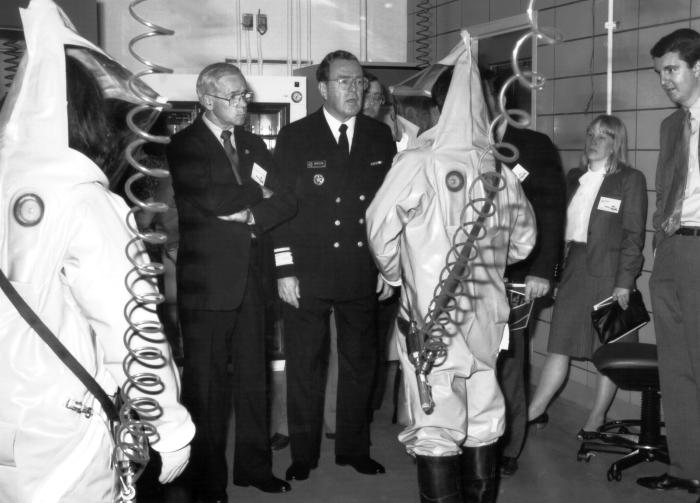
This 1988 photograph shows Assistant Secretary for Health, Robert E. Windom, MD (Cntr), observing a BSL-4 facility.